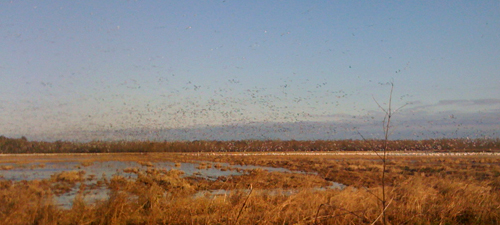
Birds at Grand Cote

Birds in flight, Grand Cote NWR/Photo courtesy USFWS, Central Louisiana Refuge Complex .

To learn more about the carbon mitigation techniques being used at Grand Cote and Lake Ophelia, read our blog post, 'Louisiana: Re-planting Forests, Reducing CO2 and Saving Wildlife'